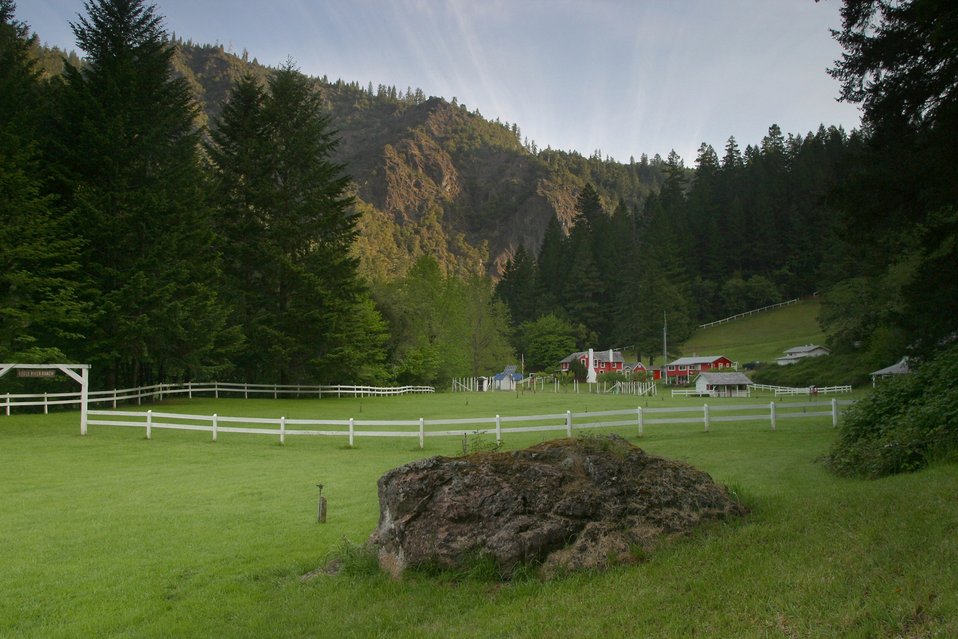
Wild section of the Rogue River from Grave Creek to Foster Bar May 19 to May 22.